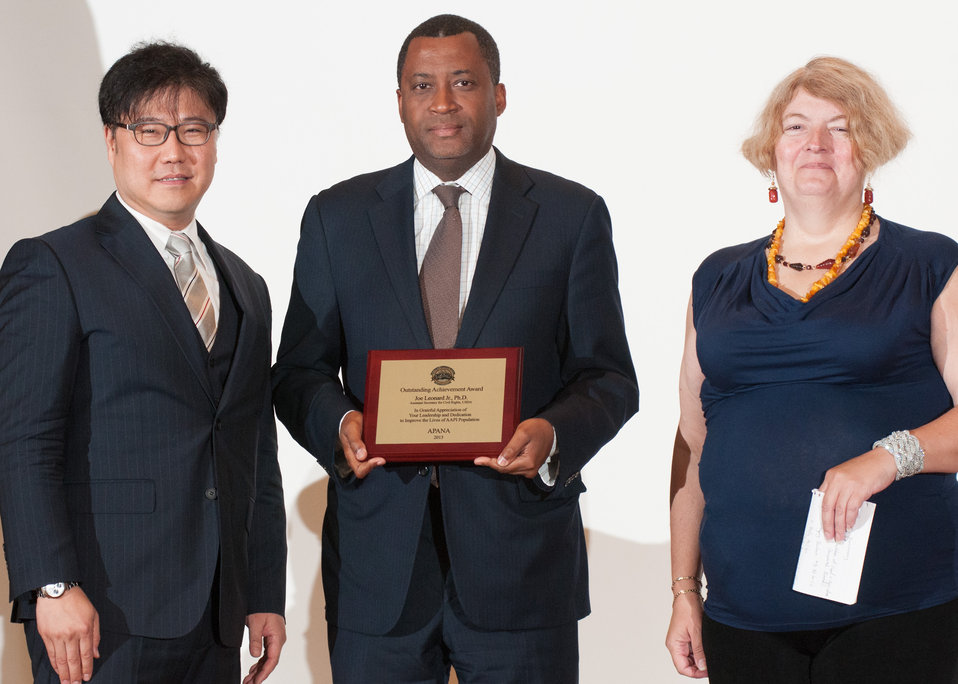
Asian Pacific American Network in Agriculture (APANA) President Justin Rhee, left, and Vice President Jennifer Painter, right, present an “Outstanding Achievement Award” for leadership and dedication to improve the lives of the Asian Americans and Pacific Islander (AAPI) population to U.S. Department of Agriculture’s (USDA) Assistant Secretary for Civil Rights Dr. Joe Leonard, who along with the Secretary, became the first federal department to connect with APANA making government more accessible to the Asian American community, during the USDA Asian Pacific American Heritage Month Observance, at the USDA headquarters in Washington, D.C., on Thursday, May 23, 2013. This year’s theme is “Building leadership; Embracing the Cultural Values and Inclusions.”